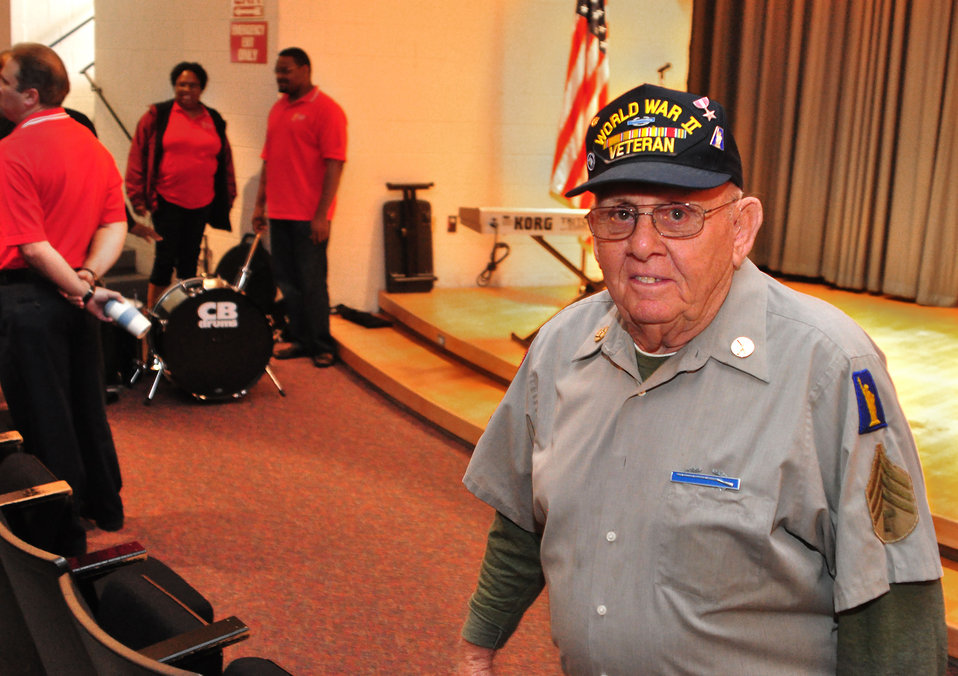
Veteran's Day Program DOE ORO Oak Ridge 2013

13-129e DOE photo Lynn Freeny 11-7-2013 Oak Ridge Tennessee